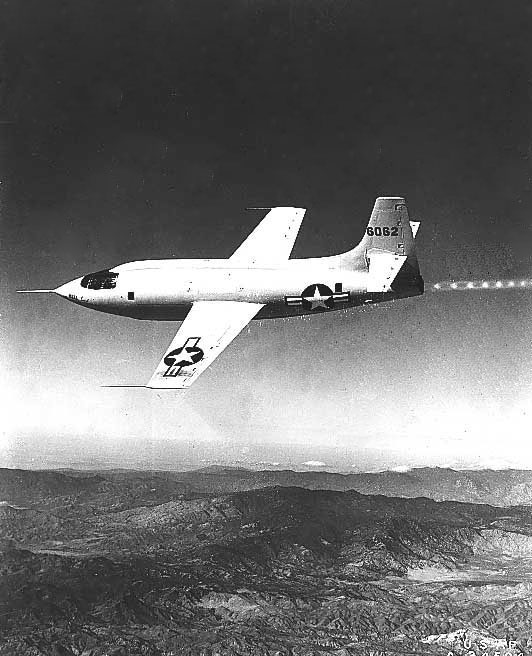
X-1

1940's -- X-1